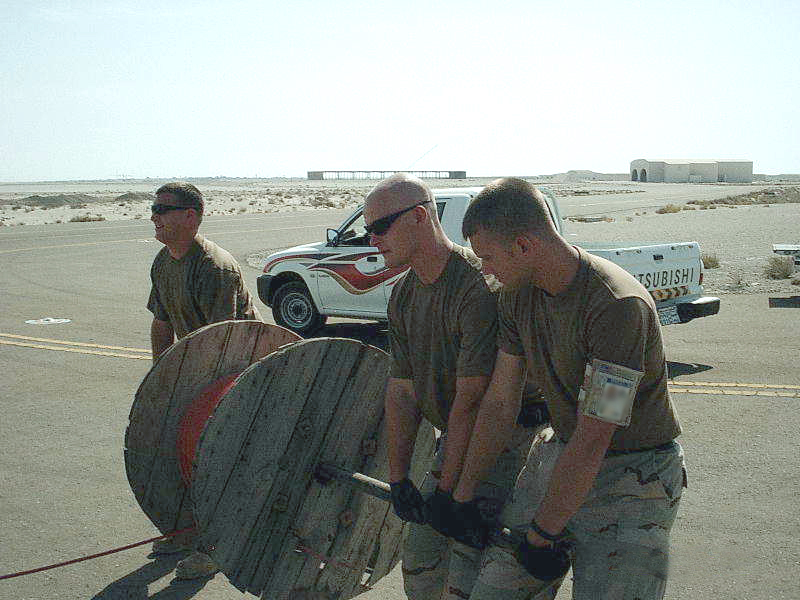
Getting it fixed

SOUTHWEST ASIA - (from left) Senior Airmen Keith Walters, Tim Ransom and Joseph McFadden played an integral role in getting the airfield lighting back on at a forward-deployed location July 30. They are assigned to the 380th Expeditionary Civil Engineer Squadron.